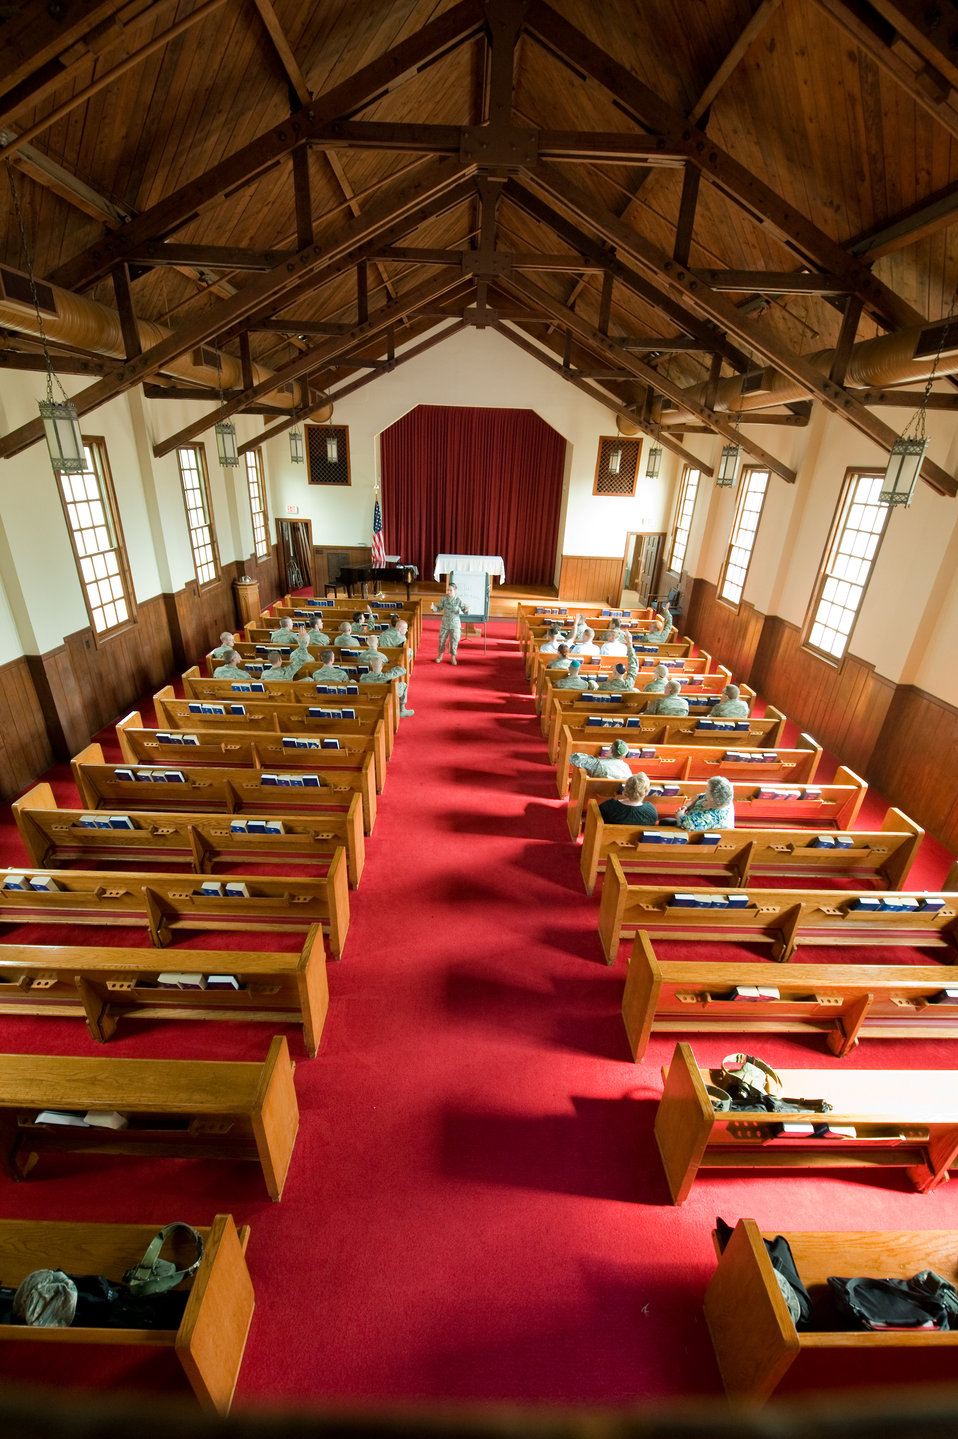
U.S. Air Force Chaplaincy

U.S. Air Force Rabbi, Chaplain, Captain Sarah D. Schechter leads the evening le'il shabbat service on Friday, Sept. 4, 2009 at Lackland Air Force Base's Airmen Memorial Chapel. The more than 25 basic military trainees and other attendees participated in a religious education class that taught them how to prepare for the Jewish New Year, Rosh Hashanah. This was followed by the Ma'ariv prayer service for the setting of the sun, and then a meal provided by lay leaders supporting the service. Because of training schedules some ceremonies and events are earlier than traditionally held. By order of commanders, those who want to attend any or all religious services of their choosing are given full permission and opportunity to do so. Chaplain, Captain Schechter is an Operation Iraqi Freedom veteran and considers her deployment there to be one of the highlights of her career. Schechter is the first woman rabbi in the U.S. Air Force.